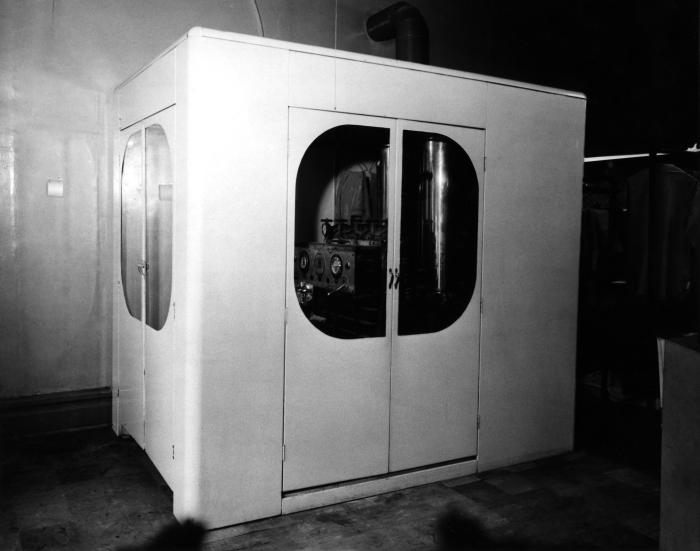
From 1950, this historical photograph was provided by the Center for Disease Control's (CDC), National Institute for Occupational Safety and Health (NIOSH), and depicted a Sec cleaning unit in a chlorinated hydrocarbon dry-cleaning plant. In the 1950s, the Industrial Hygiene Division (IHD) investigated hazards in dry cleaning environments. New non-flammable cleaners had recently been introduced that created concerns about their toxicity. Modern dry-cleaning machines now employ a 'closed system', whereupon, clothes may be cleaned, and dried in one machine without having to be transferred between two functionally-different machines.As of 2005, there were approximately 36,000 dry cleaning businesses in the U.S. with most employing less than ten people. The focus today is on the perchloroethylene, used as a solvent in 85% of dry cleaning shops. It is carcinogenic in animals and suspected to be so in humans.